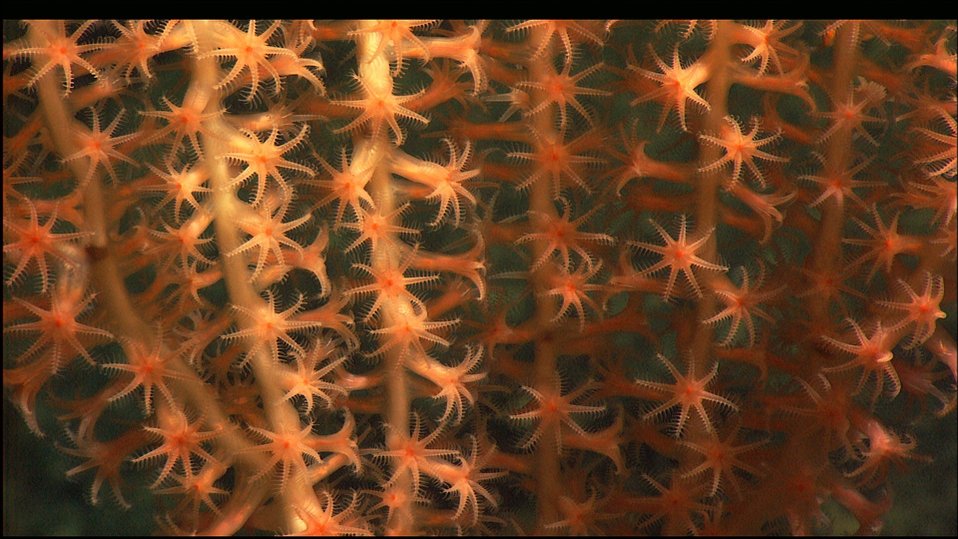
Extended polyps of lyrate bamboo coral - an octocoral. Dive 16.